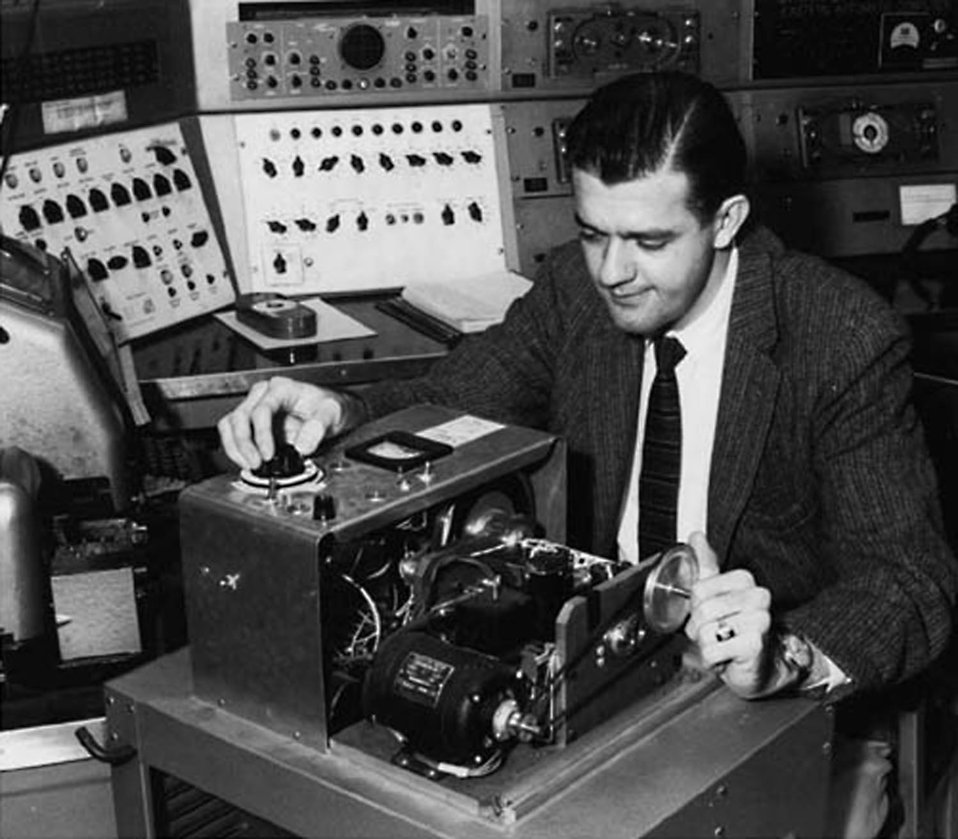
Fiftieth Anniversary of First Digital Image Marked

National Bureau of Standards (NBS) researcher R.B. Thomas shown operating the SEAC scanner (the control console is in the background).